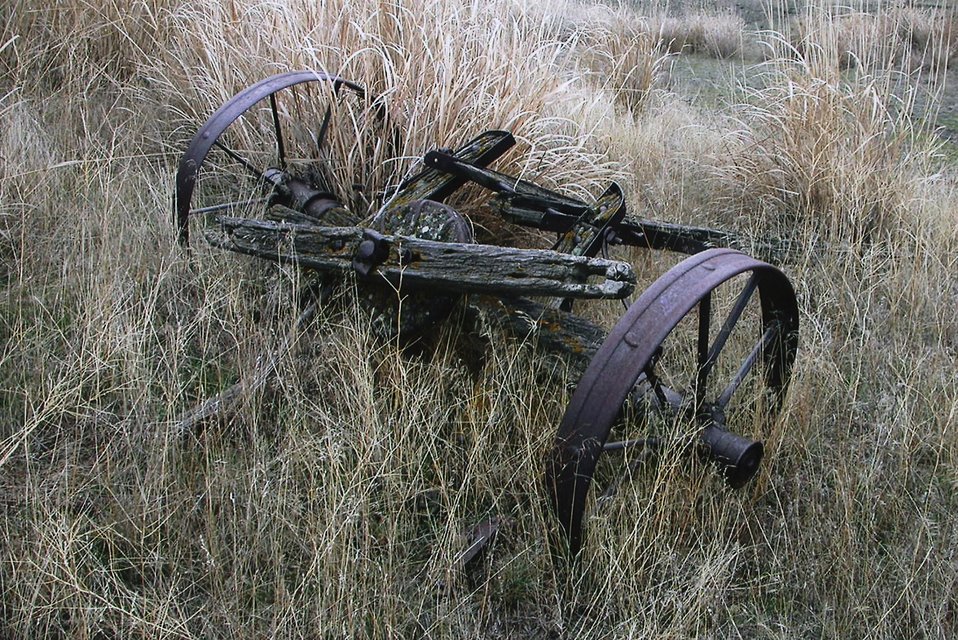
Ben's homestead wagon. Hurley-Olignger Ranch, Telford, WA Dana Komen, Spokane Cultural HM